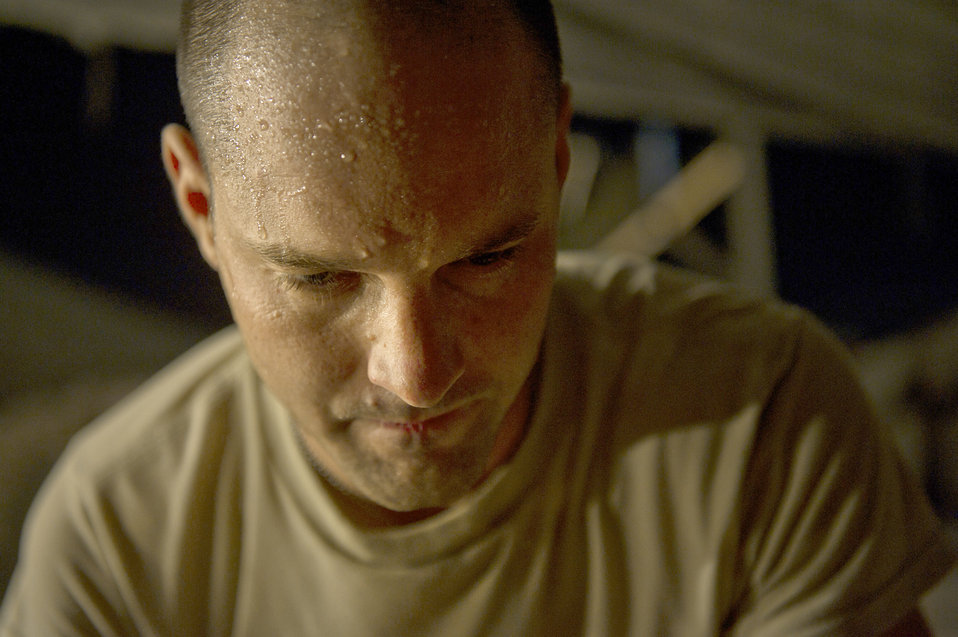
Sergeant Reininger

Master Sgt. Jason Reininger builds a child-size coffin to be turned over to the hospital at Camp Bastion, Afghanistan. Sergeant Reininger is an aerospace medical technician assigned to the 451st Expeditionary Aeromedical Evacuation Squadron.